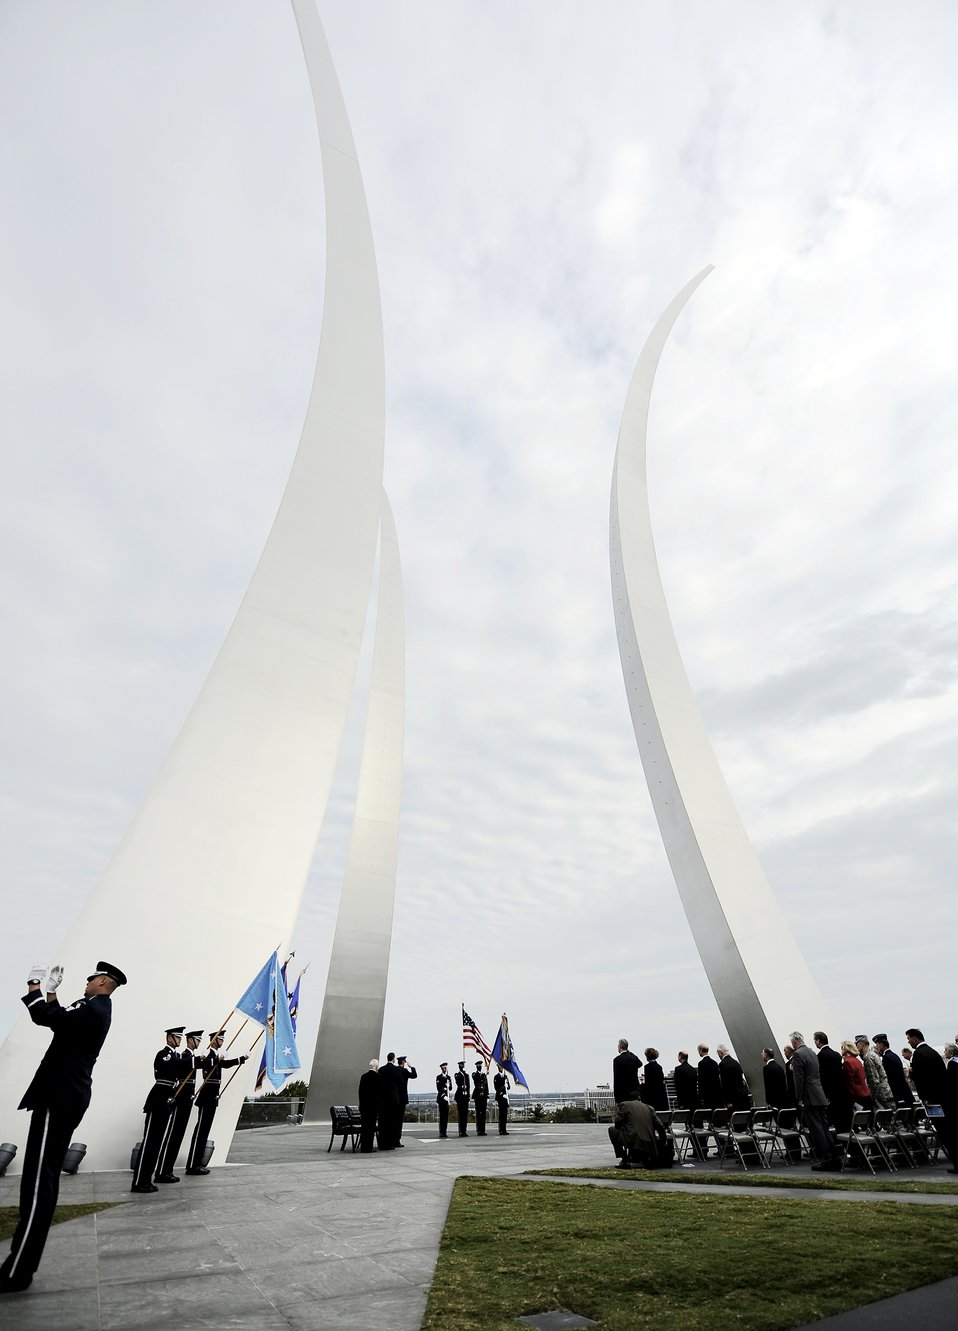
Honoring the Air Force

The Air Force Memorial stands to honor the service and sacrifice of the men and women of today's U.S. Air Force and the organizations that preceded the modern force. .